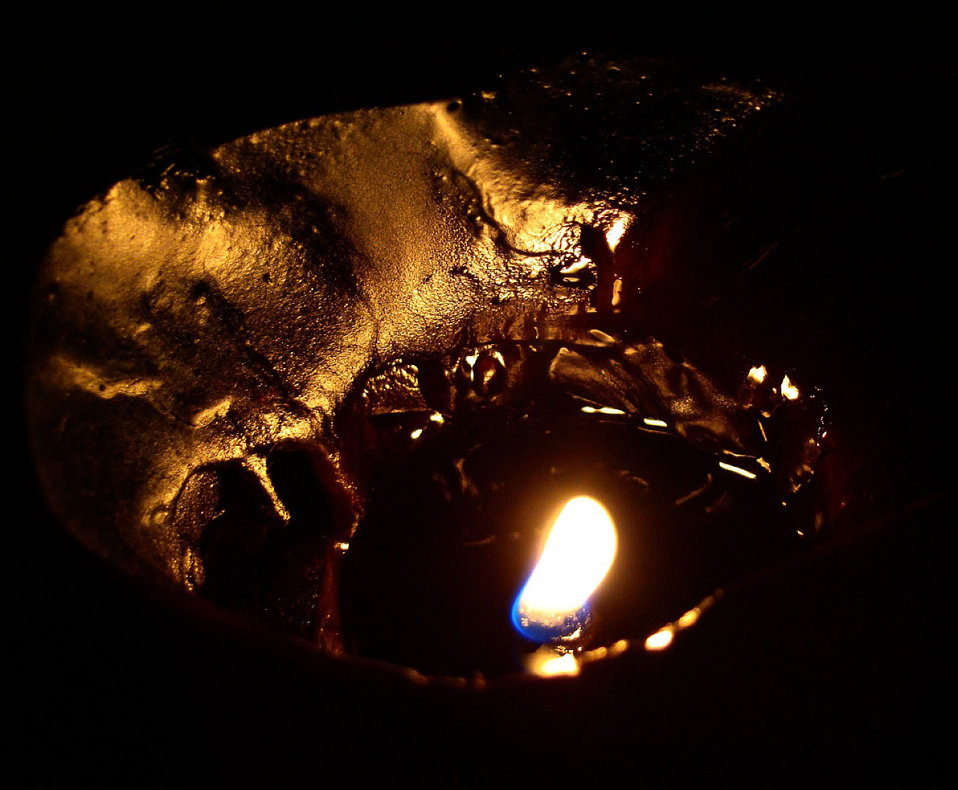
Flame of burning candle in the dark.